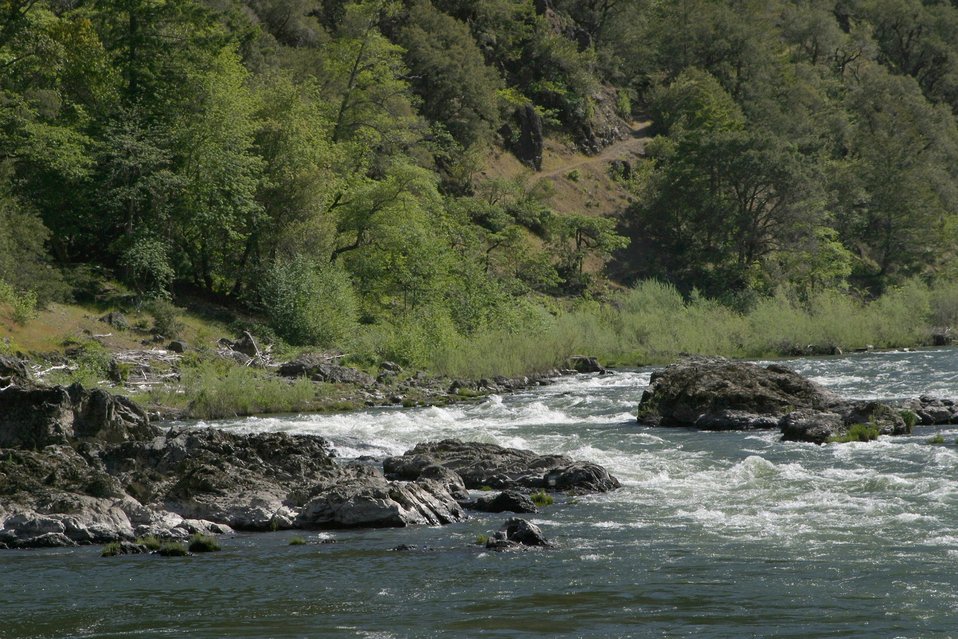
Tyee Rapid on the Wild section of the Rogue River from Grave Creek to Foster Bar May 19 to May 22.